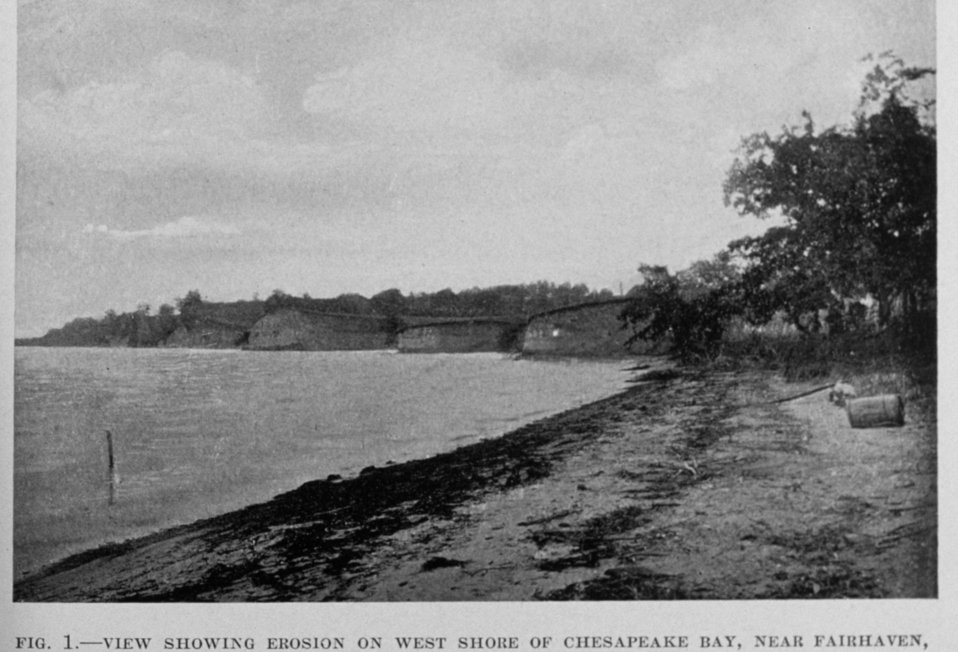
View showing erosion along west side of Chesapeake Bay near Fairhaven.